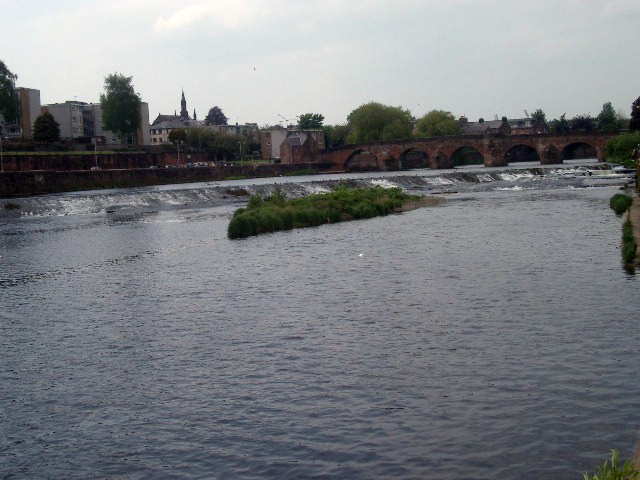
The 'Caul' and Devorgilla bridge on the River Nith This is a photo of listed building number 26354